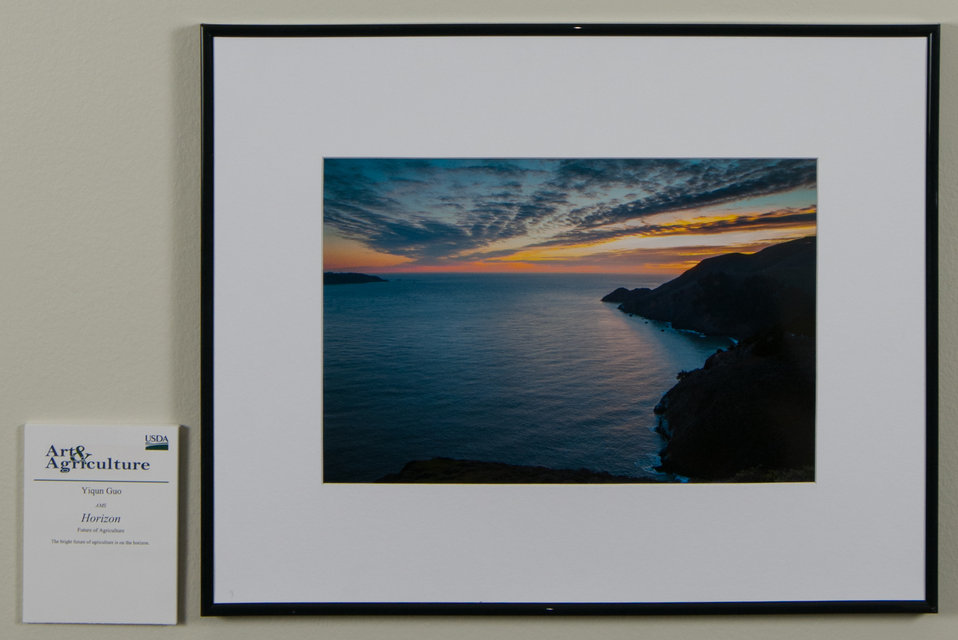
Online Viewer's Choice entries of the 2013 Art & Agriculture, Tuesday, July 9, 2013, in the South Building, Washington, D.C. Themes were expressed by employees from across the department and the contest was open to full-time and part-time USDA employees. Winning artwork will be displayed till the end of the year. U.S. Artistic expression is a creative outlet that is vital for an individual to grow and develop.